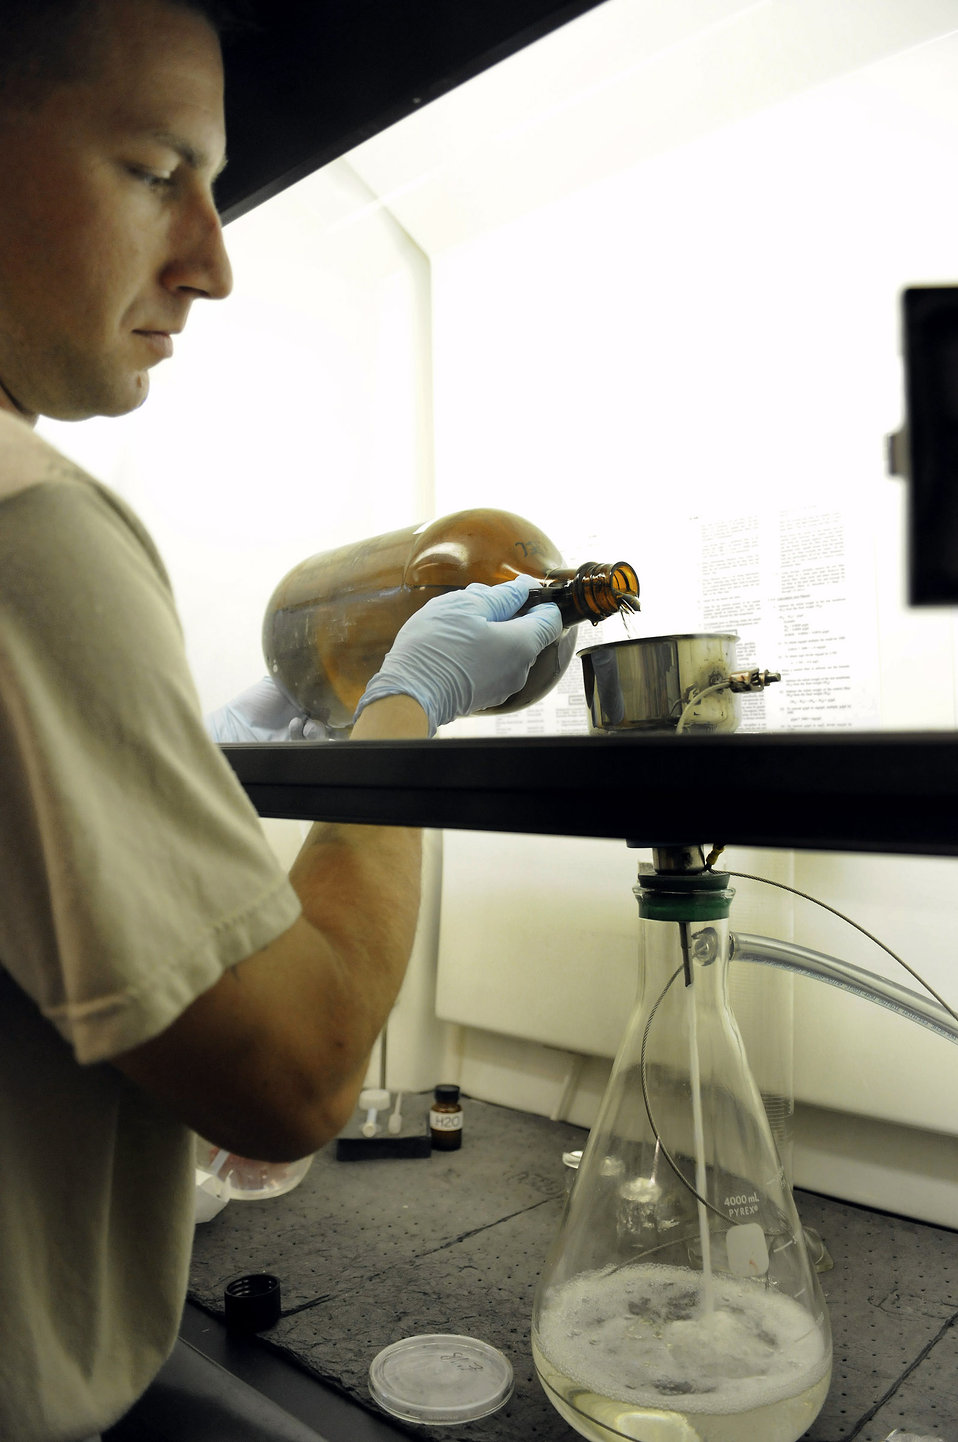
Fuel quality

Staff Sgt. Ronald Gasper pours fuel through a filter membrane into a beaker as part of a bottle method test Dec. 8 at an air base in Southwest Asia. The filter membrane is weighed before and after a bottle method test; the differences in weight will show the amount of impurities in the fuel. The weekly bottle method test is used to test the fuel truck's filter separator and how well it is screening impurities from the fuel. Sergeant Gasper is a fuels lab technician assigned to the 379th Expeditionary Logistics Readiness Squadron and deployed from Scott Air Force Base, Ill. He is a native of Omaha, Neb.